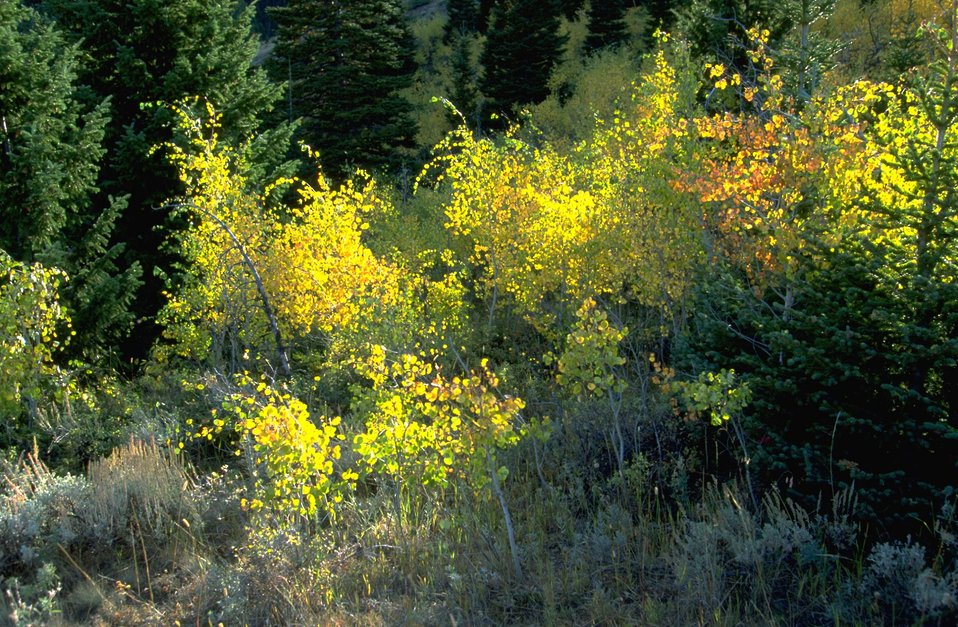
Fall Foliage near Axolotl Lake